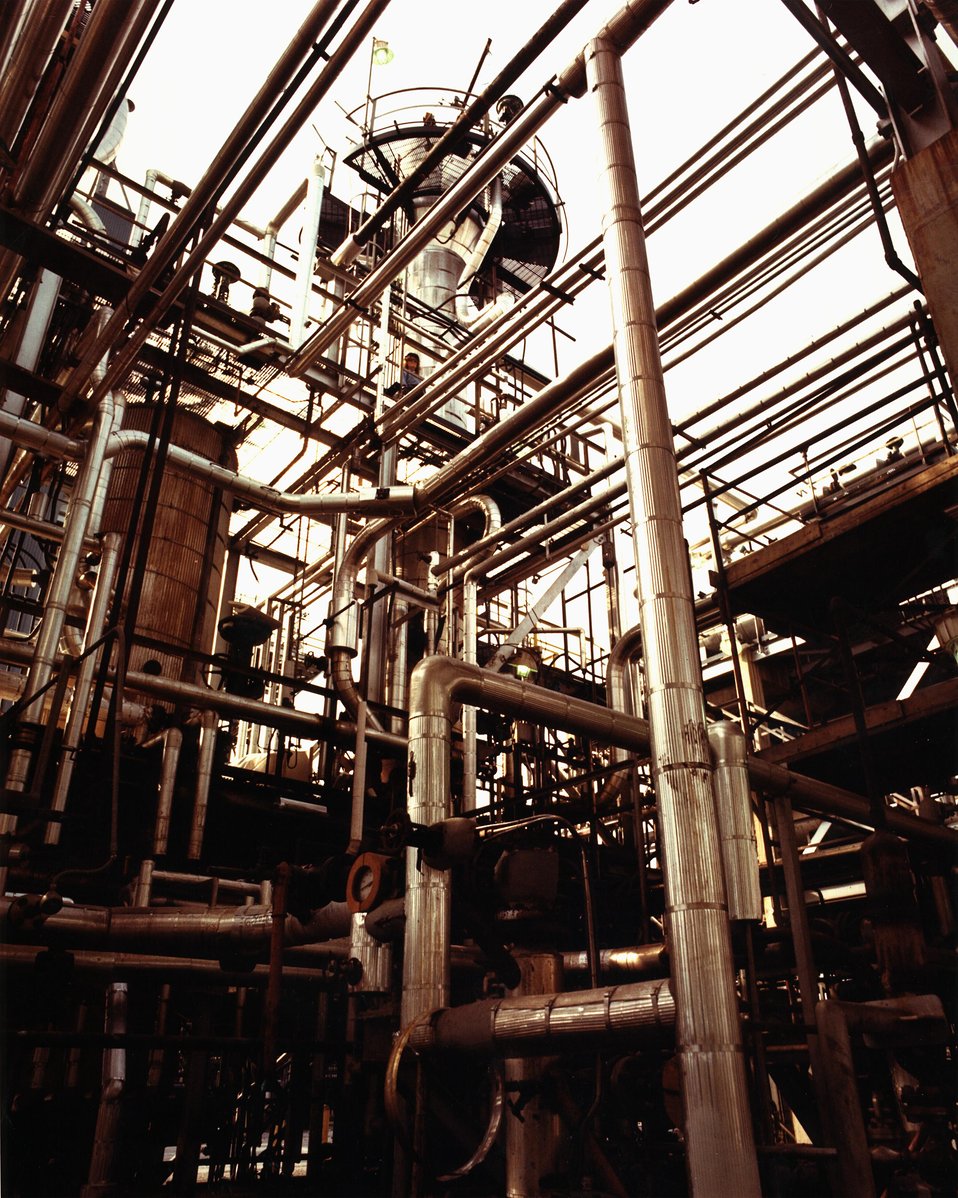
CONSTRUCTION PROGRESS AT H-COAL PILOT PLANT.